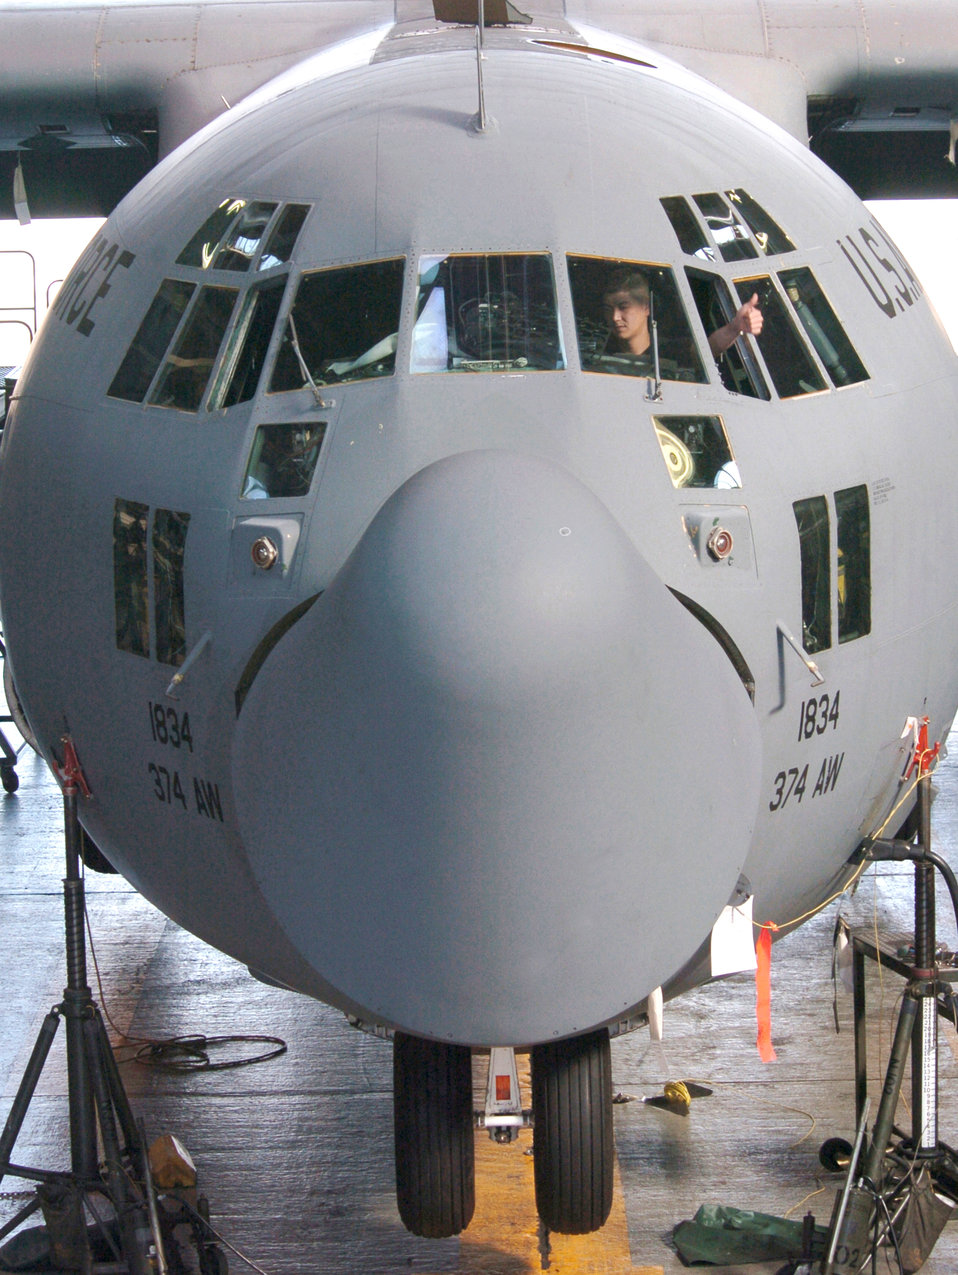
Yokota isochronal Airmen keep Pacific fleet healthy

YOKOTA AIR BASE, Japan -- Staff Sgt. Shayn Powers gives a thumbs up while inspecting inside the cockpit of a C-130 Hercules during an annual inspection here. Sergeant Powers is a field training instructor from the 372nd Training Squadron.